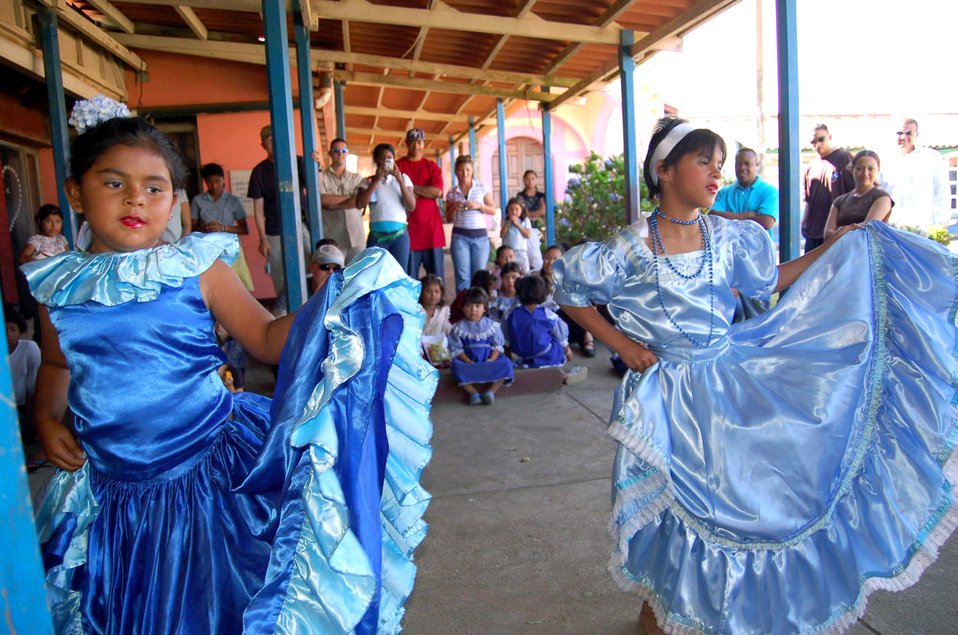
Airmen visit Nicaraguan orphanages, deliver donations

Carolina Jarquin and Guadalupe Sanabria dance for Camp RED HORSE members April 7 at the Siervas del Divino Rostro orphanage in Santa Teresa, Nicaragua. Camp RED HORSE members collected and donated more than $500, more than 80 books and more than 100 toys to two orphanages in Santa Teresa for the Easter holiday. They also put on Easter eggs hunts and spent the day playing games with the children.